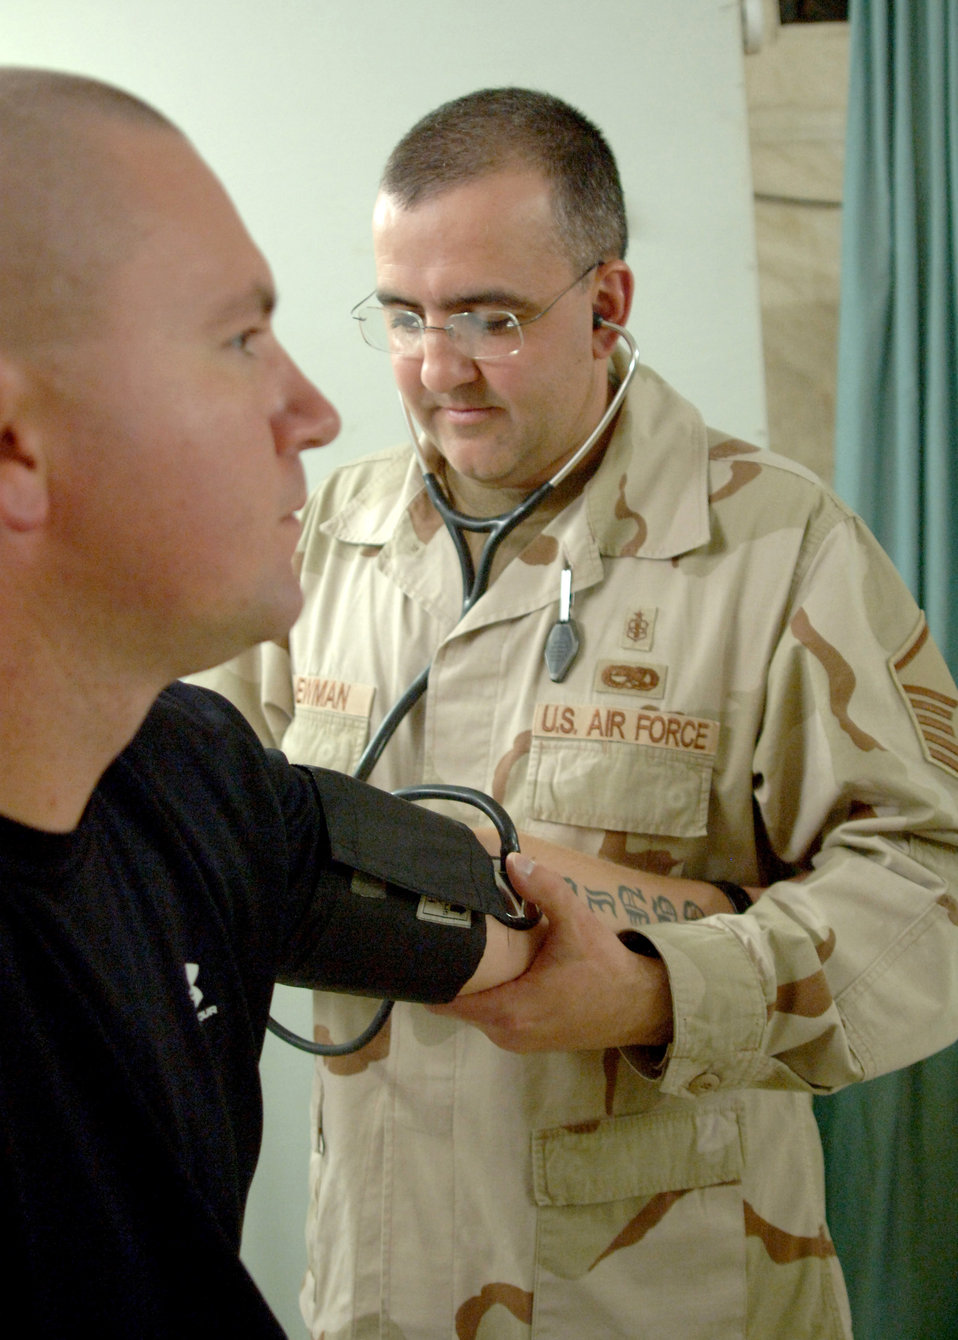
Single-parent dads deal positively with deployment

Master Sgt. William Newman checks Tech. Sgt. Chris Cook's blood pressure in the Kingpin Clinic Feb. 21 inside the 727th Expeditionary Air Control Squadron compound at Balad Air Base, Iraq. Sergeant Newman is nicknamed